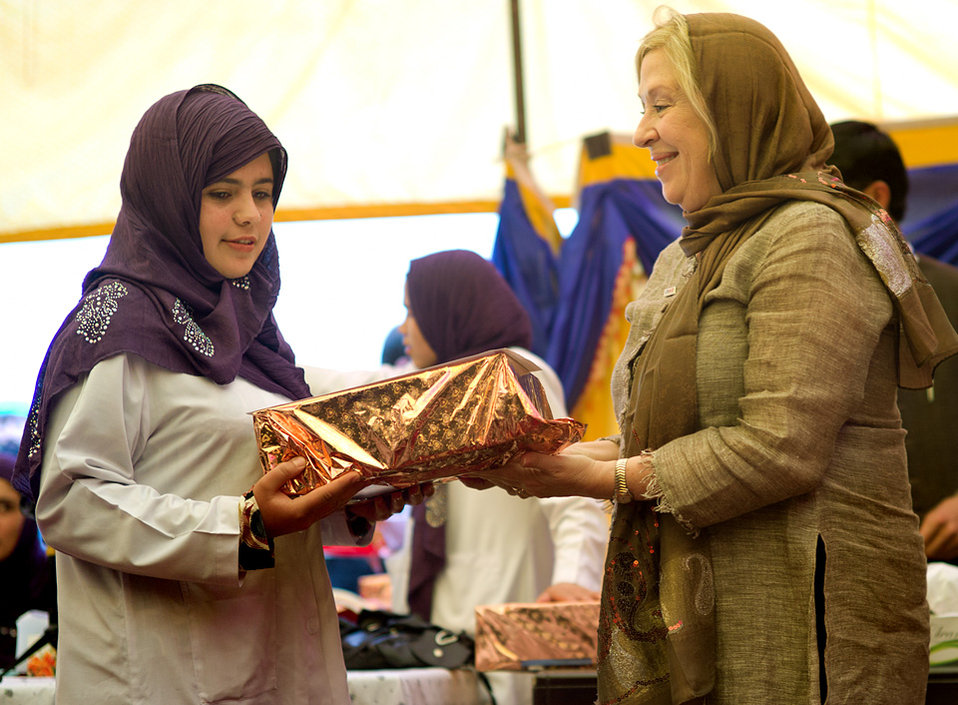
Carol Presenting graduation Gift1